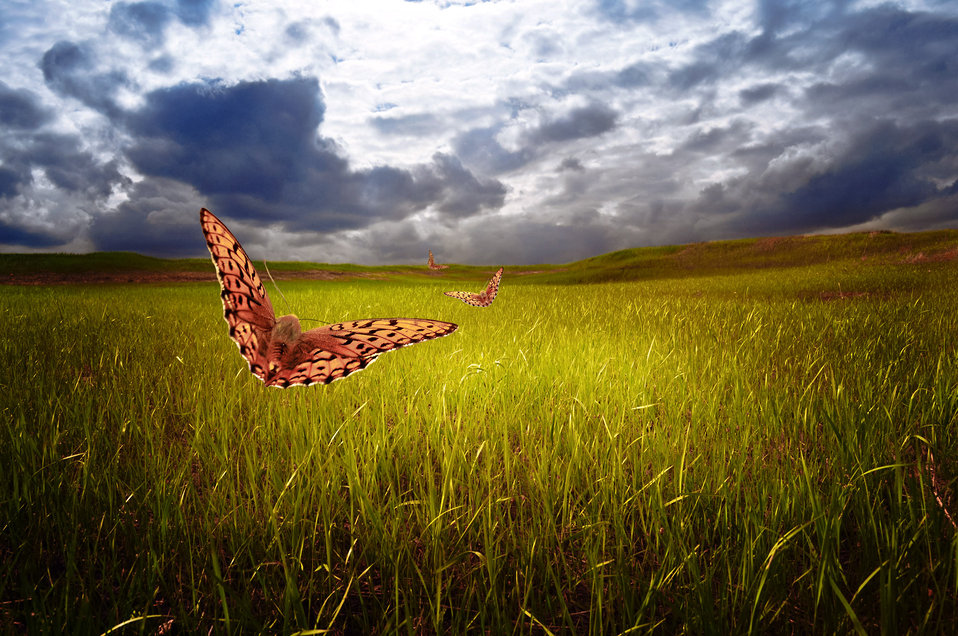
Field, the sky and butterflies

Summer fantasy landscape.